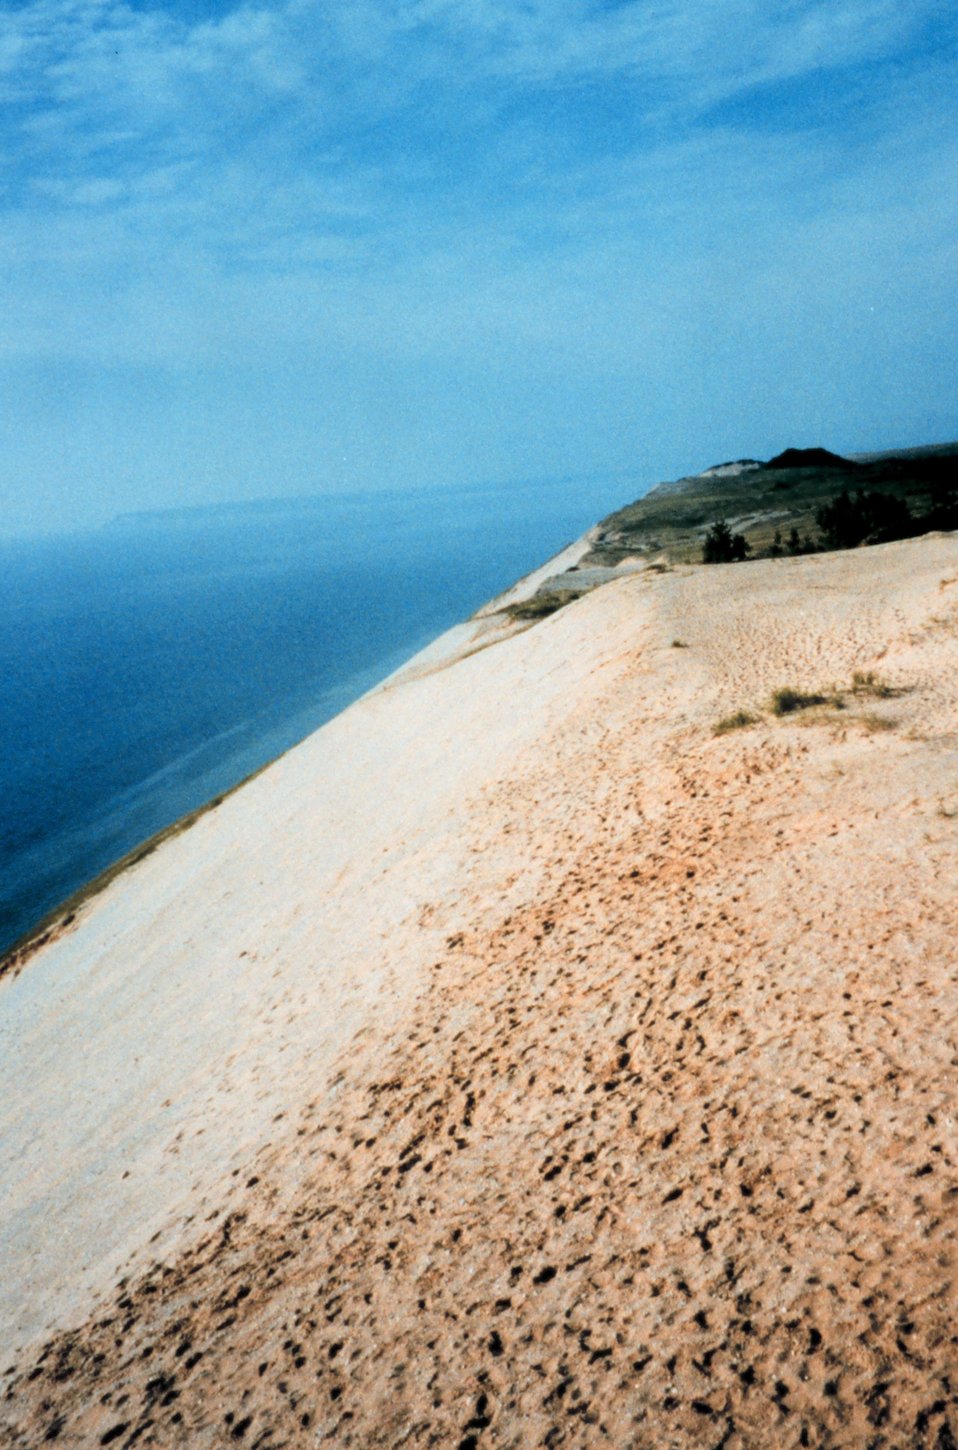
West of Traverse City, Michigan